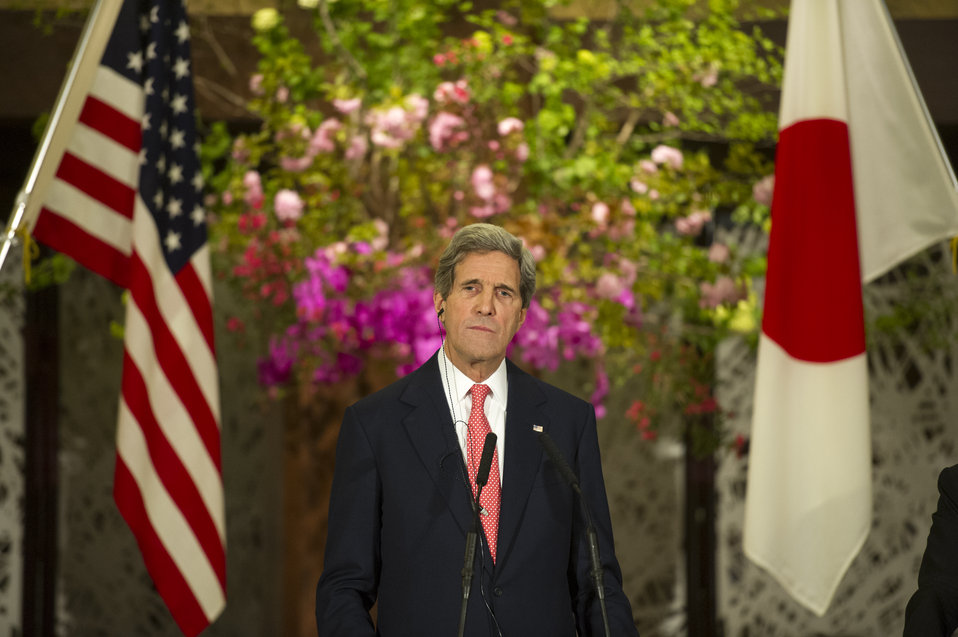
Secretary Kerry at a Tokyo Press Conference

U.S. Secretary of State John Kerry addresses the media in Tokyo, Japan, on April 14, 2013.